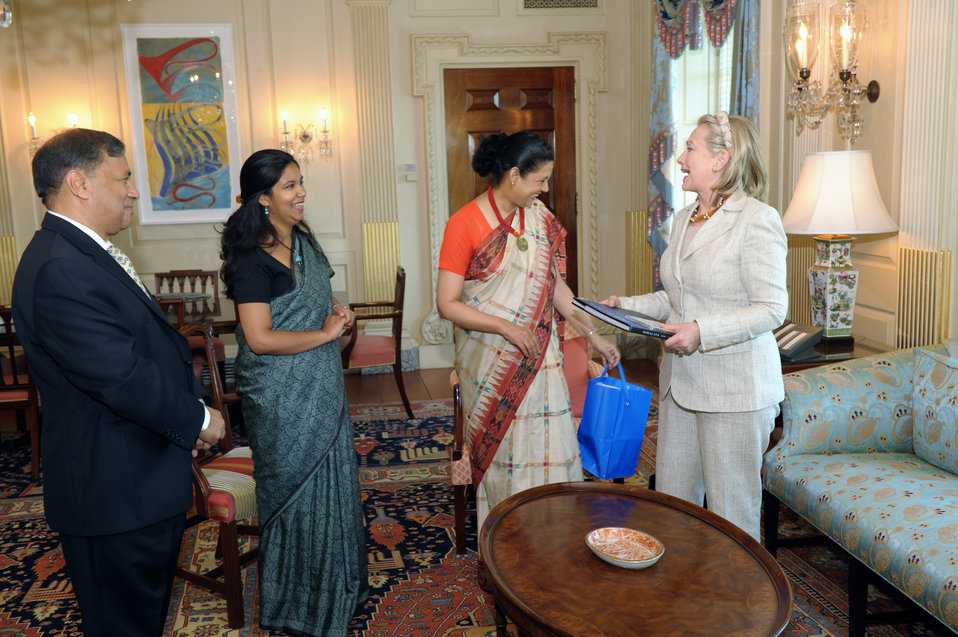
Secretary Clinton Meets With Indian Ambassador Shankar

U.S. Secretary of State Hillary Rodham Clinton, right, meets with Indian Ambassador the U.S. Meera Shankar, second from the right, at the U.S. Department of State in Washington, D.C., on July 27, 2011.